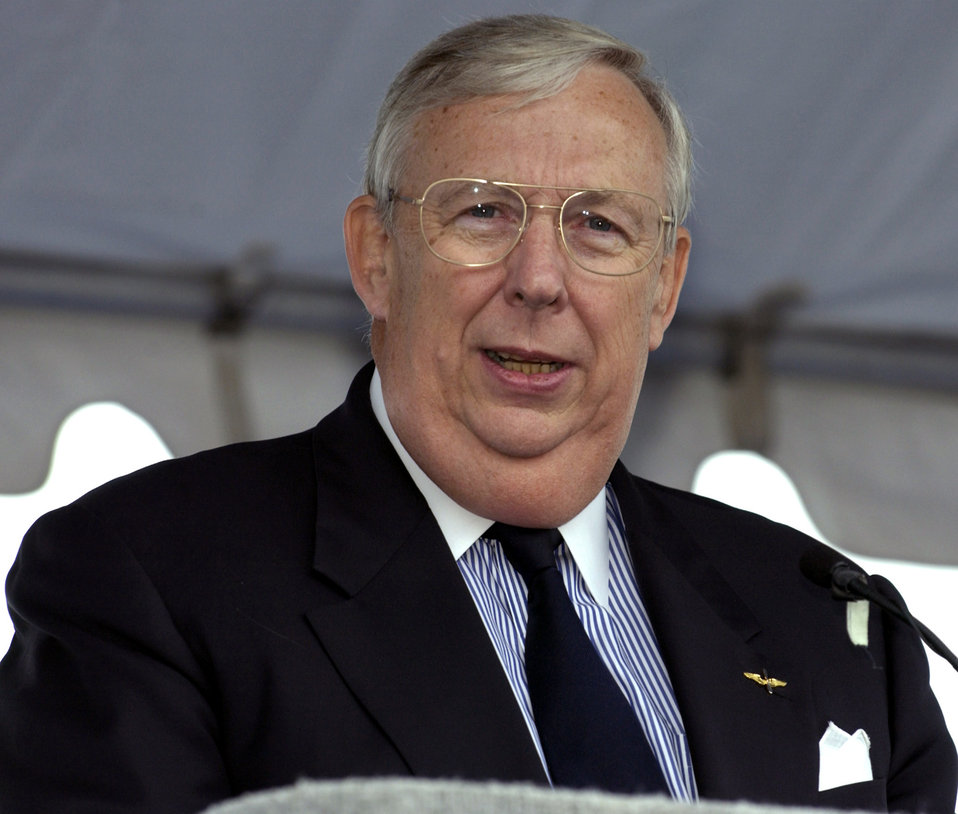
Thirteen years later, Air Force dedicates its memorial

ARLINGTON, Va. -- Secretary of the Air Force Dr. James G. Roche addresses hundreds of people gathered for the official groundbreaking and site dedication ceremony on the site of the future national Air Force Memorial on Sept. 15. The 270-foot tall memorial is designed to honor all those who have served in the U.S. Air Force and its predecessor organizations.